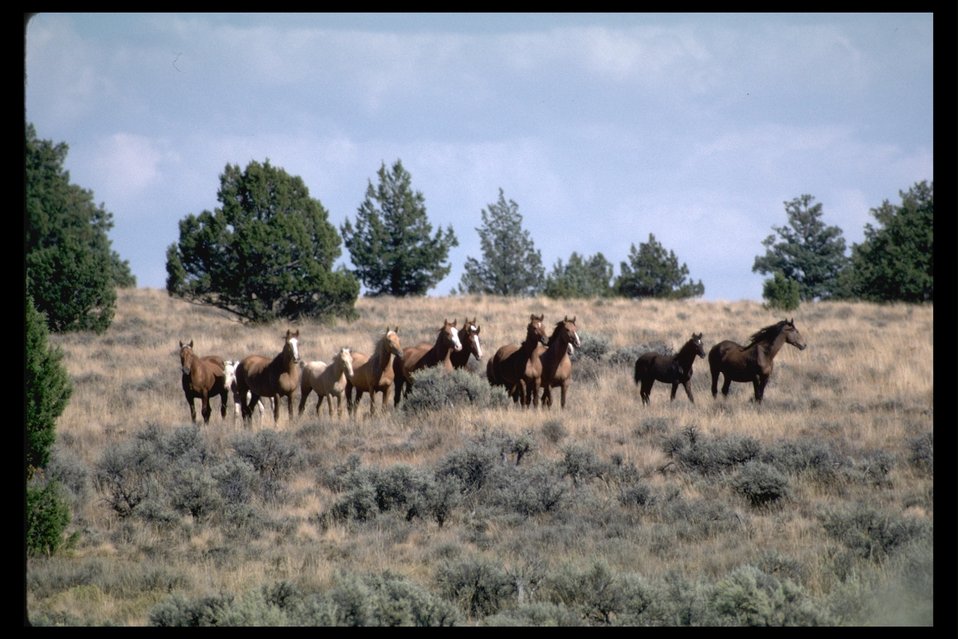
Wild horses in the Palomino Buttes HMA.